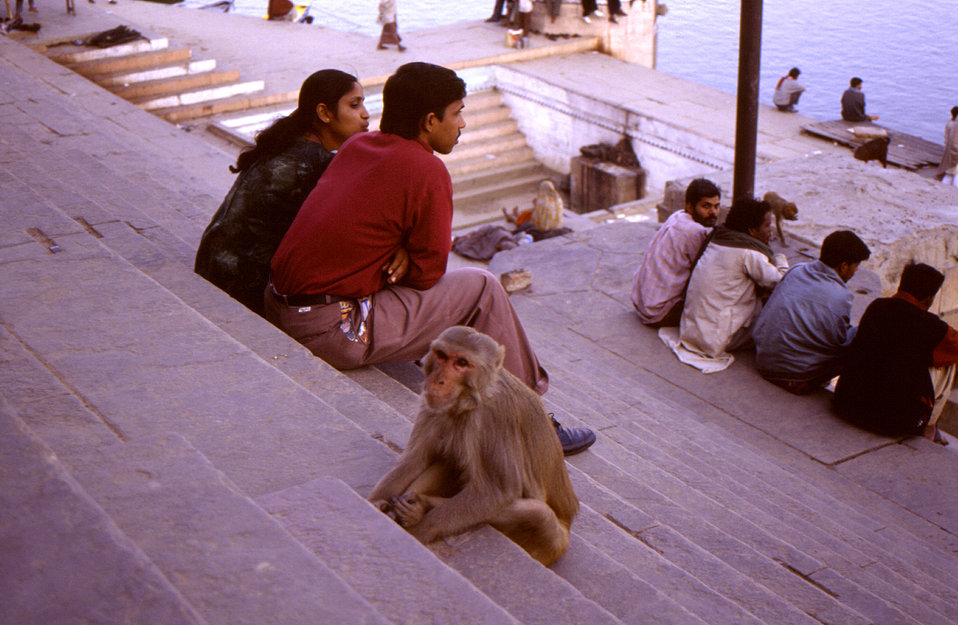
As you can see here, monkeys, as well as people, frequent the steps, or Ghats along the Ganges River in Varanasi, one of the holiest cities in India. It is to these ghats that pilgrims flock in order to bath in the Ganges River's holy waters. It is through this bathing ritual that one may be absolved from all sins. This photograph was captured by Chris Zahniser, B.S.N., R.N., M.P.H., a STOP Transmission of Polio (STOP) immunization initiative team member and photographer, who was assigned to the state of Uttar Pradesh in northern India, and spent three months working in the Districts of Gorakhpur and Deoria.